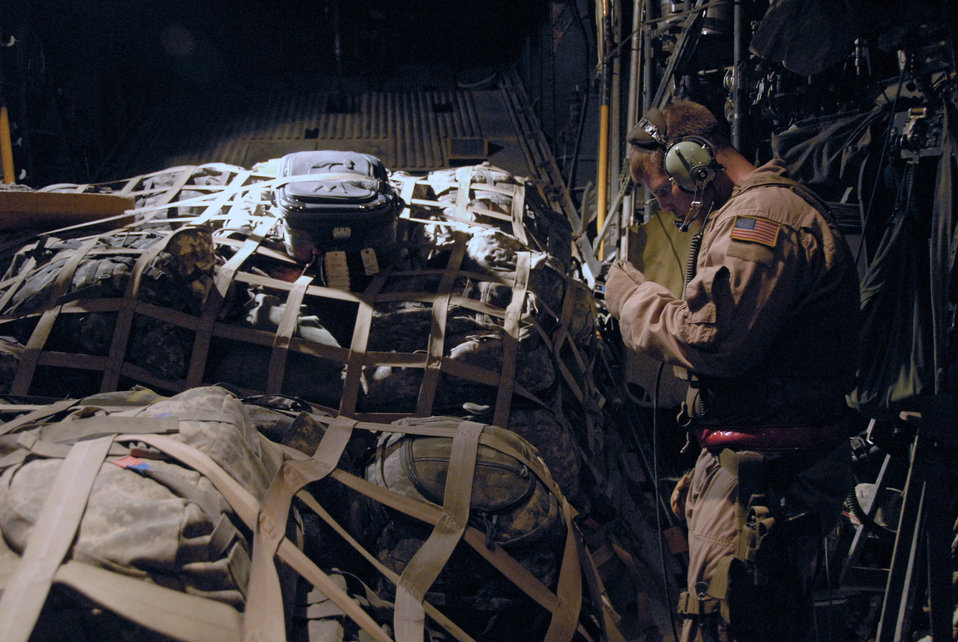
Special delivery

Senior Airman Joel Pfaff uses a personal digital assistant to compute the weight and balance of the aircraft prior to takeoff May 13 from an air base in Iraq. Airman Pfaff's job is to ensure the cargo and passengers are balanced correctly in the back of the aircraft. Airman Pfaff is a C-130 Hercules loadmaster with the 737th Expeditionary Airlift Squadron deployed from Dyess Air Force Base, Texas.